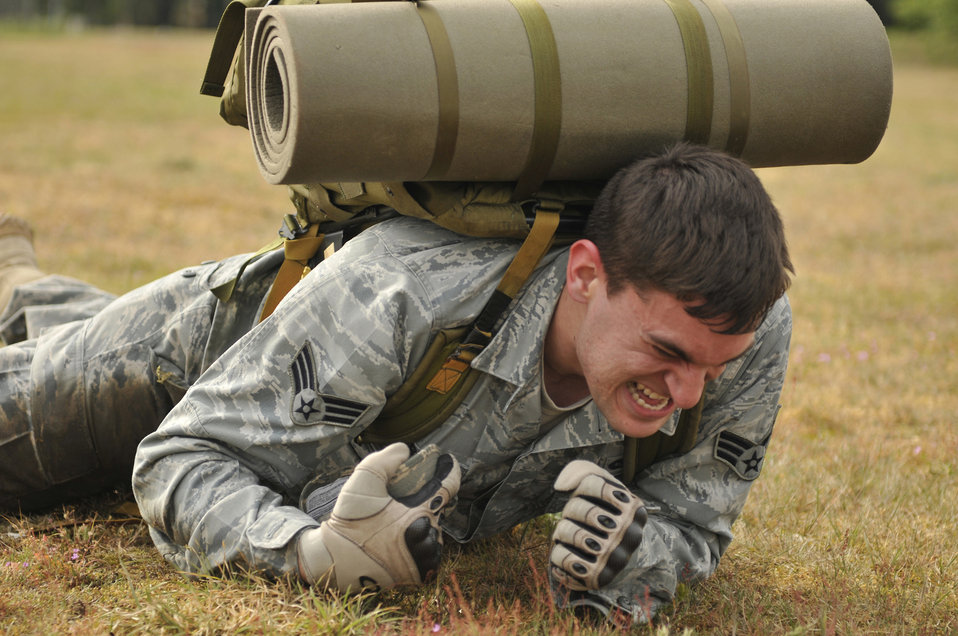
I can do this!

Senior Airman Ben Forbus crawls while carrying a 35-pound rucksack May 17, 2011, during the 5K Combat Ruck March Challenge at Royal Air Force Lakenheath, England. Airman Forbus is a patrolman assigned to the 48th Security Forces Squadron.